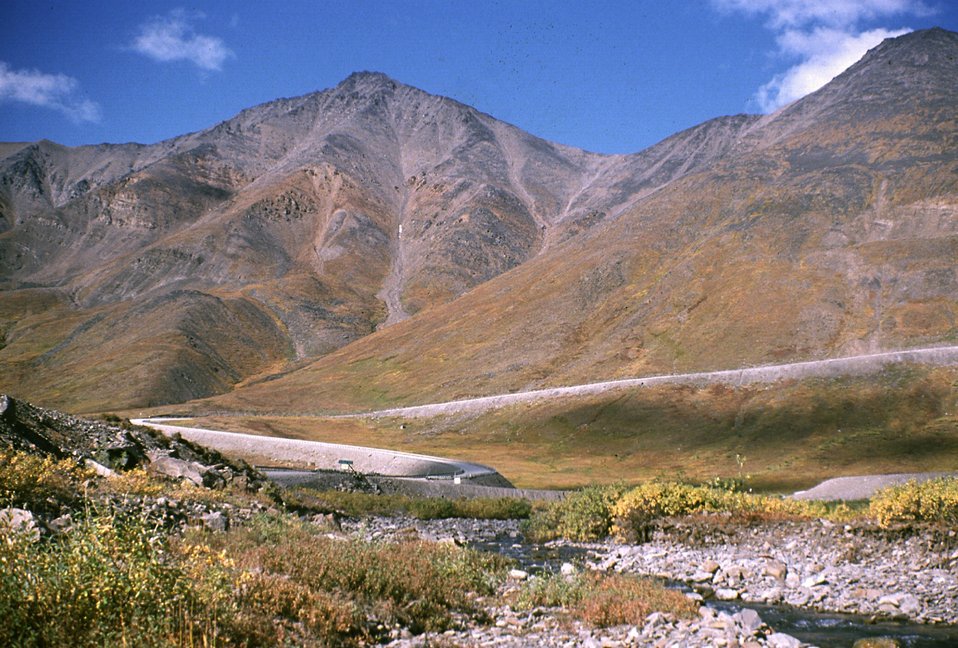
Dalton Highway, Atigun Pass, Brooks Range, south side